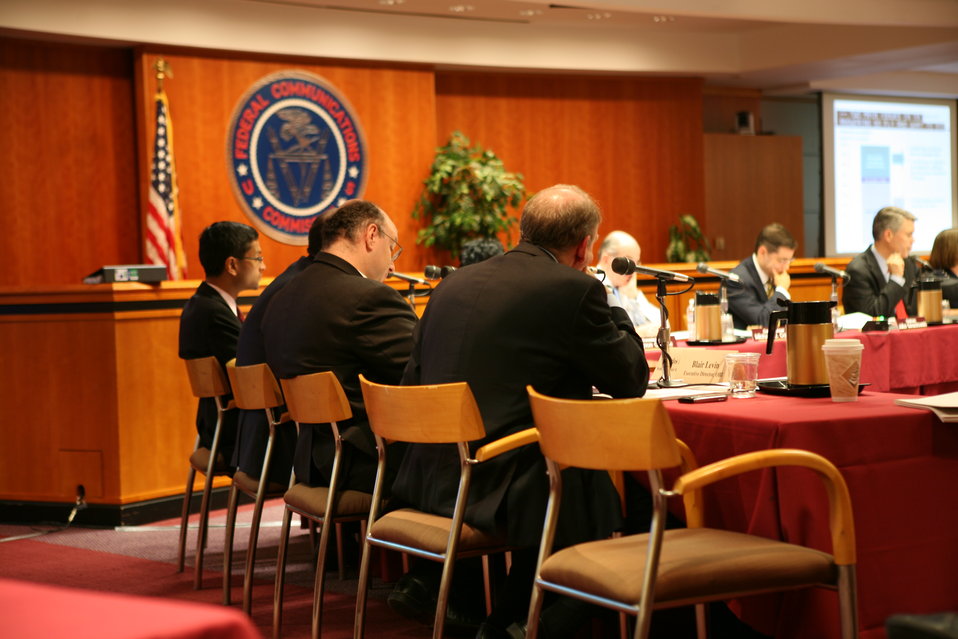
Midterm Review14

Broadband Midterm Review, 9-29-09